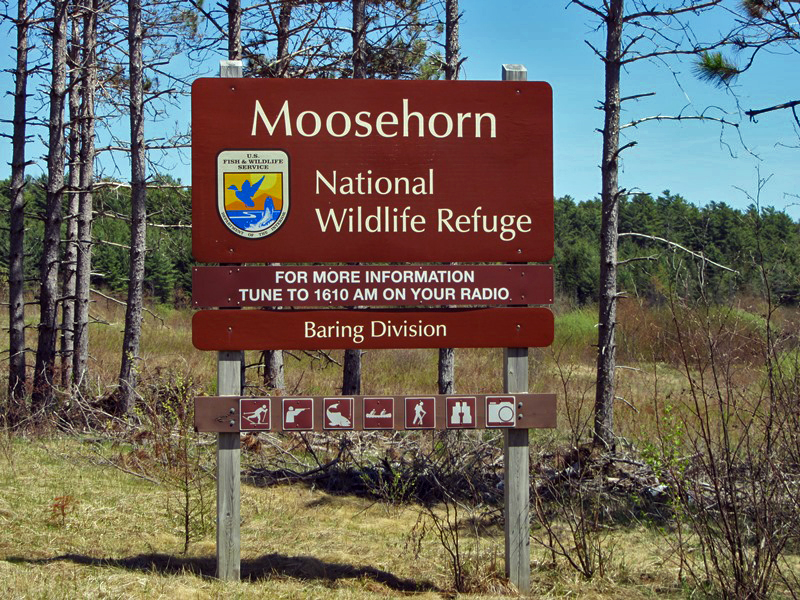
Moosehorn sign